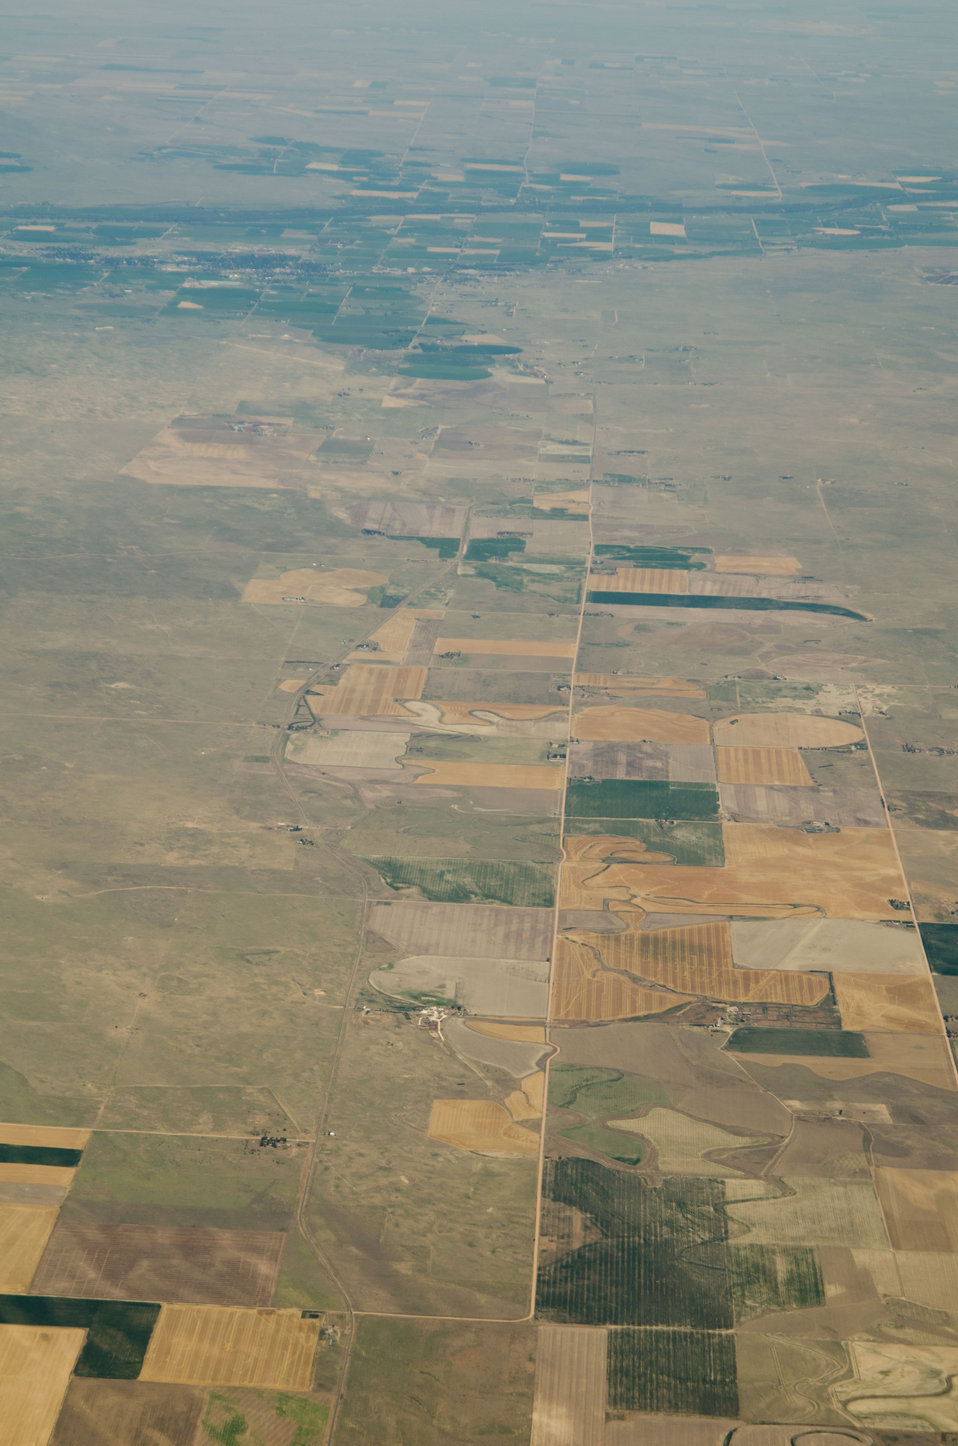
Aerial views of drought affected Colorado farm lands, 16 miles SE of Ft. Morgan, Colorado on Saturday, July 21, 2012. Green areas are irrigated, the yellow areas are dryland wheat crops.